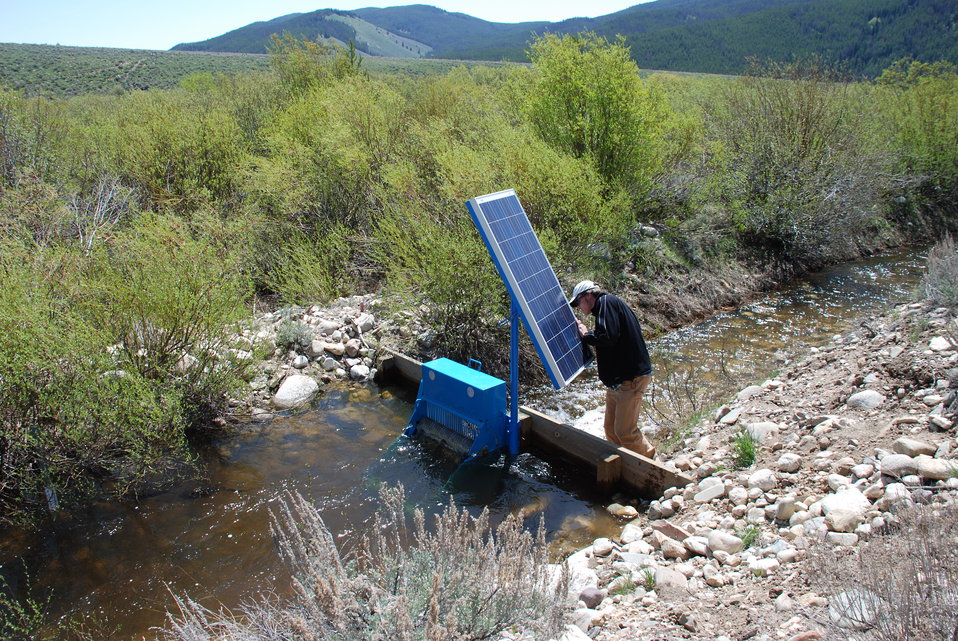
Regional Leadership Visit to Montana 2014